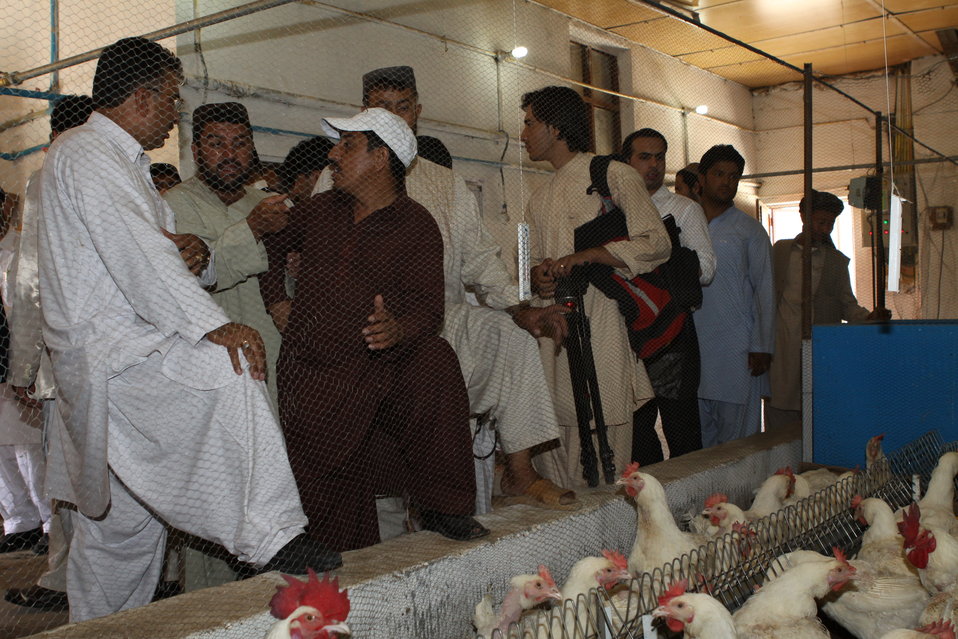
Bolan Poultry Farm